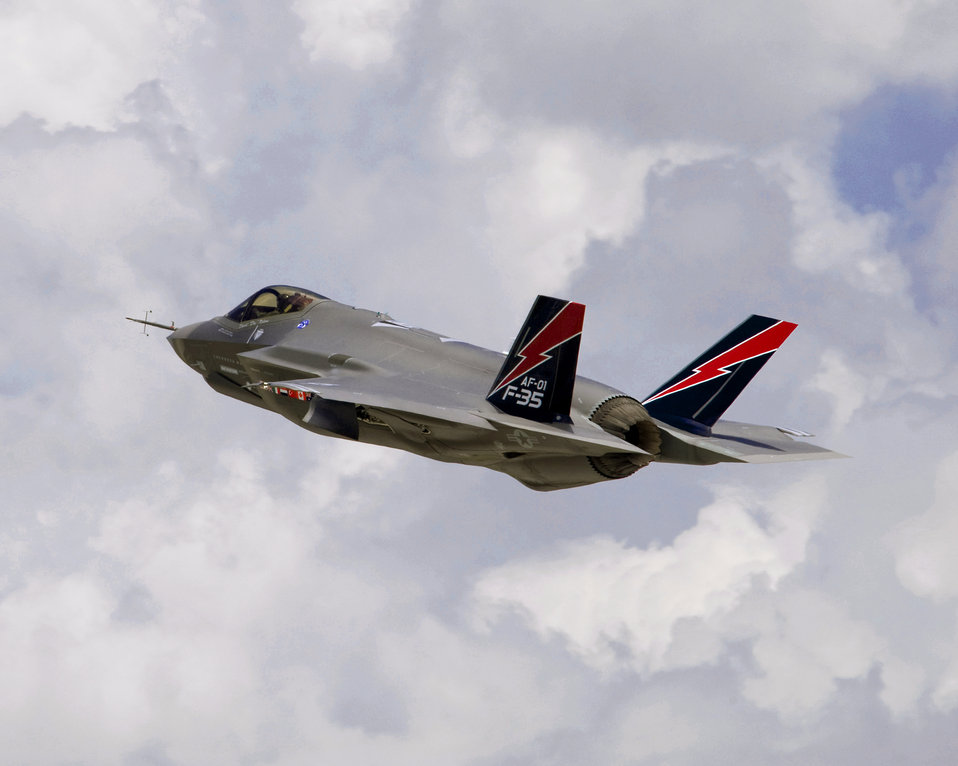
F-35A Lightning II

AF 1, one of two F-35A Lightning II joint strike fighters flying nonstop to Edwards Air Force Base, Calif., departed its final-assembly site in Fort Worth, Texas, May 17, 2010. As part of the F-35 flight test operations expansion, the jets will undergo ground- and flight-test activities for propulsion, aerial refueling, logistical support, weapons integration and flight-envelope expansion. The arrival is the first in a series that will increase the Edwards AFB F-35 test fleet to at least eight aircraft.